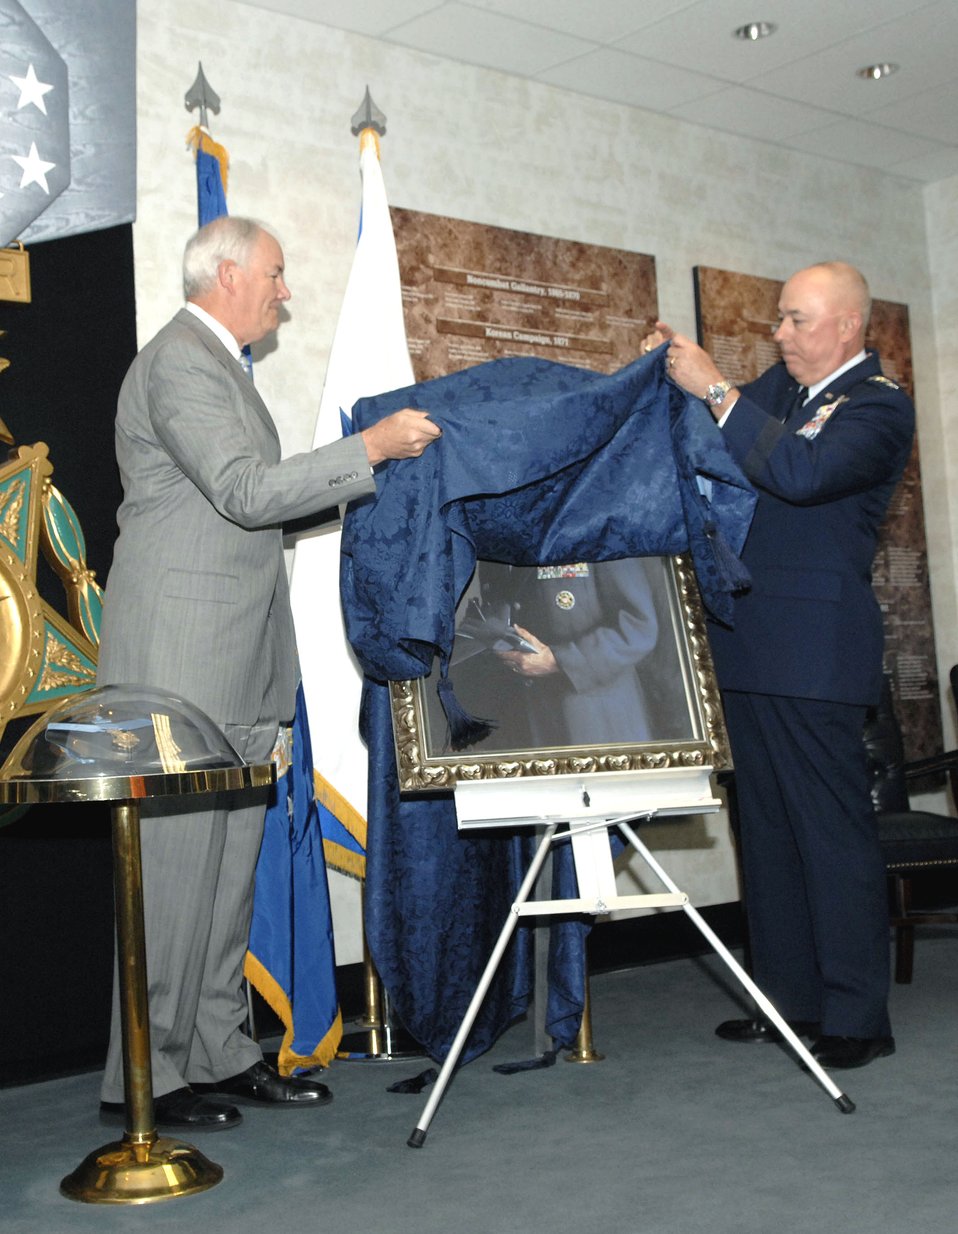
Portrait of General Jumper unveiled

The painting of the Air Force's 17th chief of staff, Gen. John P. Jumper, is unveiled in the Hall of Heroes at the Pentagon by Secretary of the Air Force Michael W. Wynne and Air Force Chief of Staff T. Michael Mosely on Oct. 16.